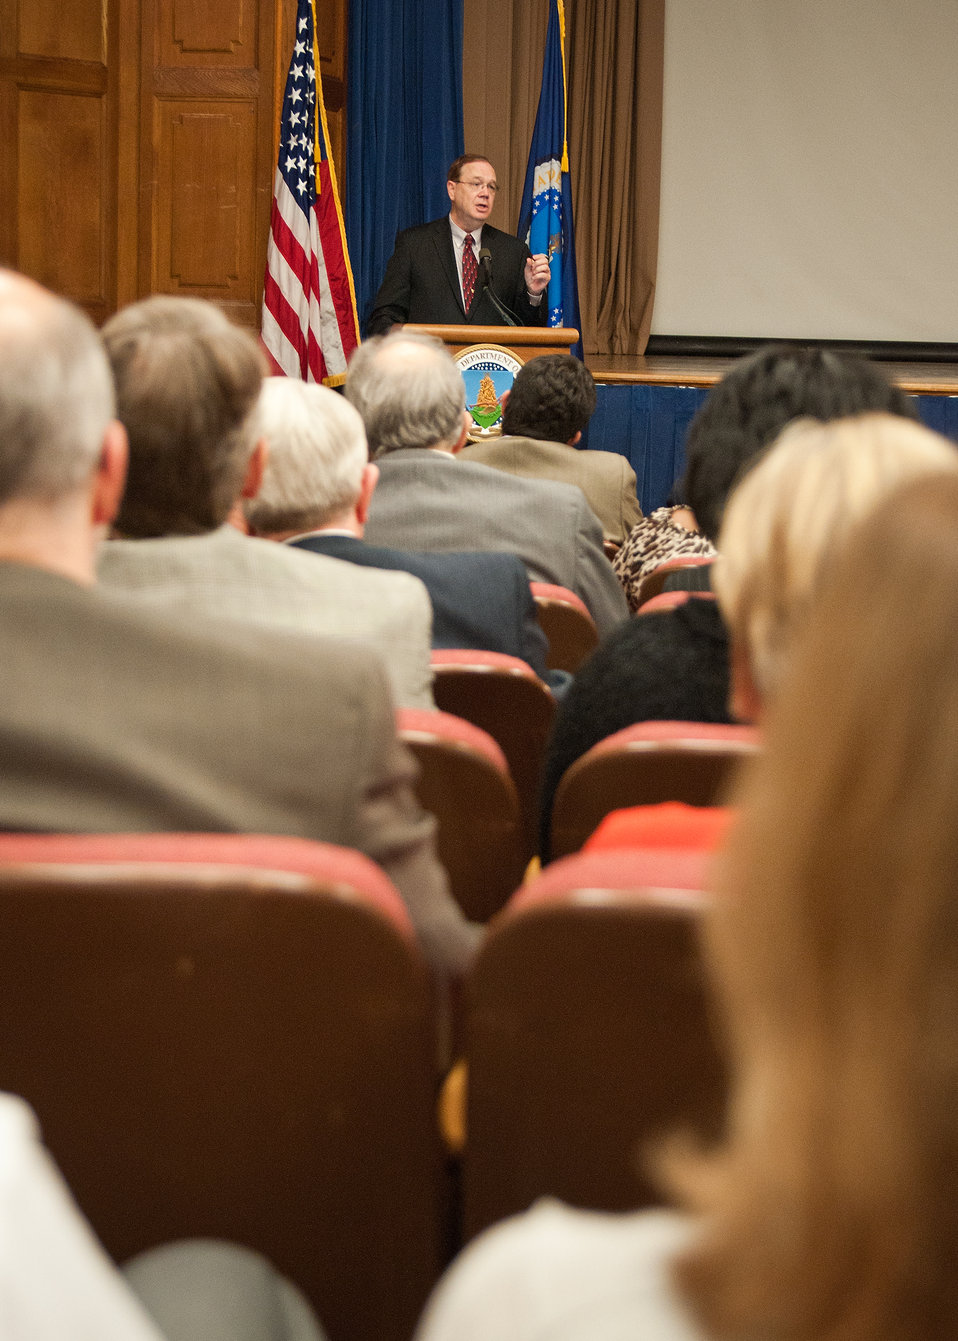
Dallas Tonsager, Under Secretary, Rural Development offers his congratulations to retiring employees and thanks to all employees for their public service and hard work during the Rural Development Celebration of Service held at the United States Department of Agriculture in Washington, DC, Wednesday, November 16, 2011.